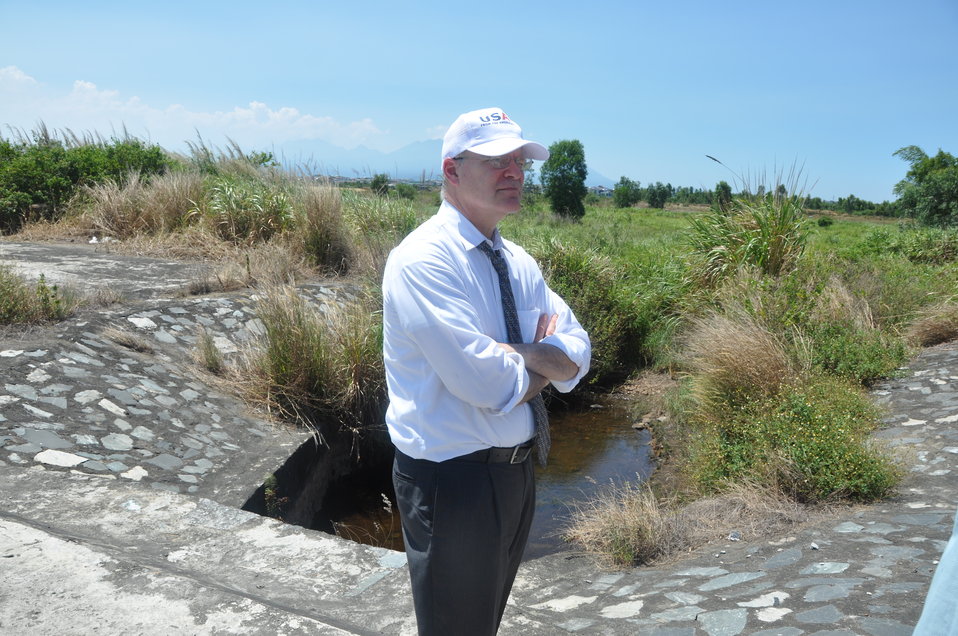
USAID Deputy Administrator Donald Steinberg and delegation visit Danang Airport

USAID Deputy Administrator Donald Steinberg Visits Vietnam